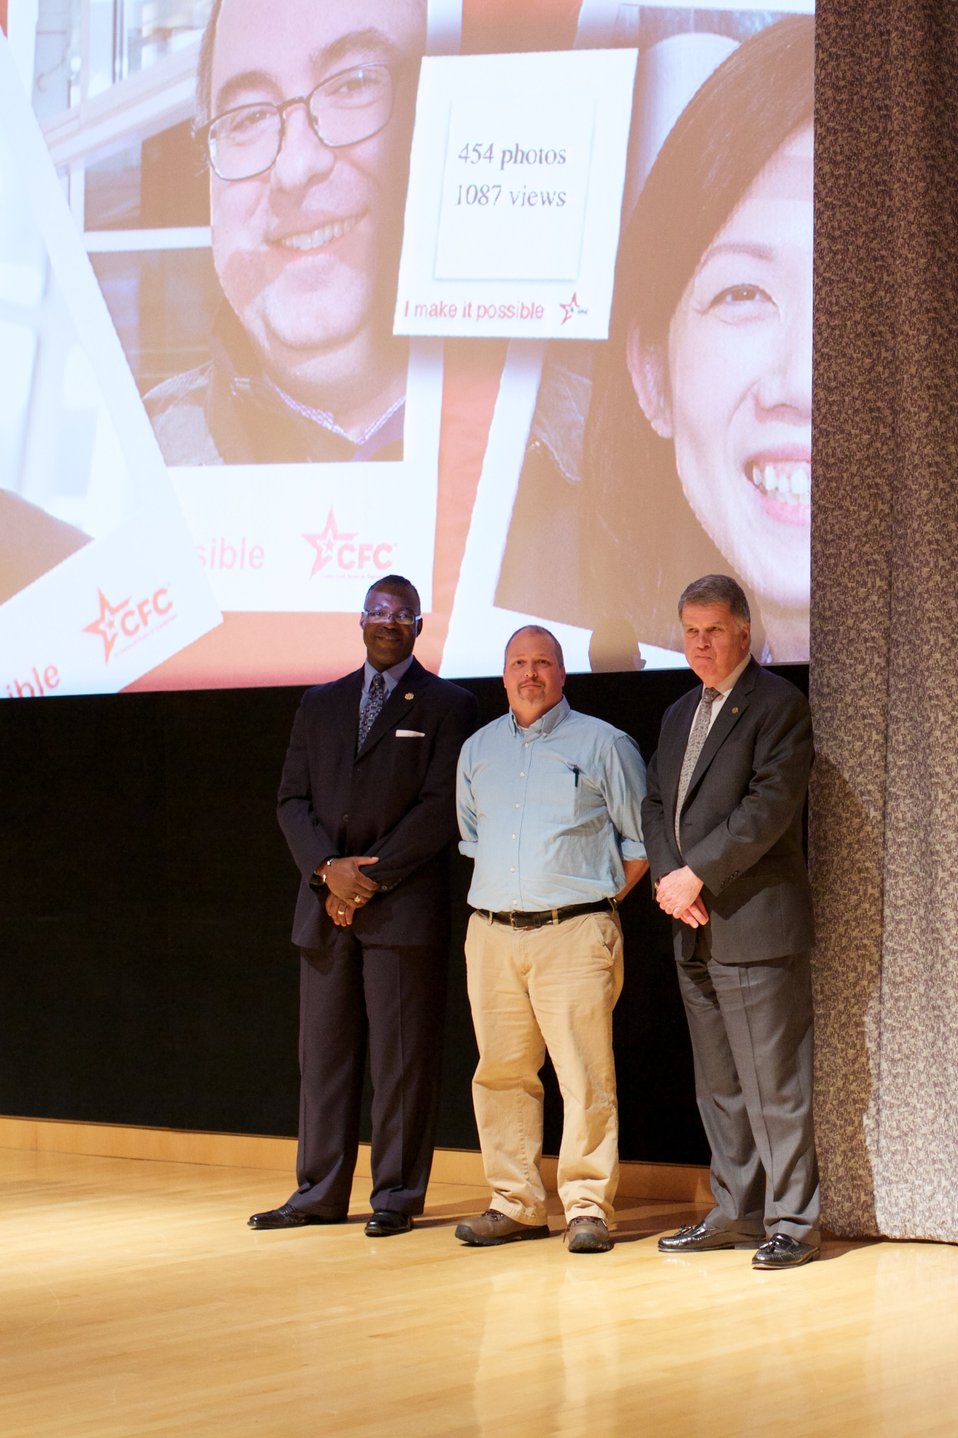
CFC Recognition Event